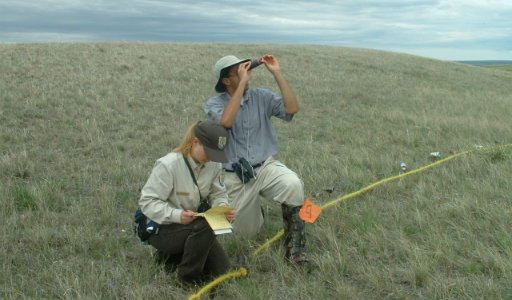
Songbird nesting study on Bowdoin NWR